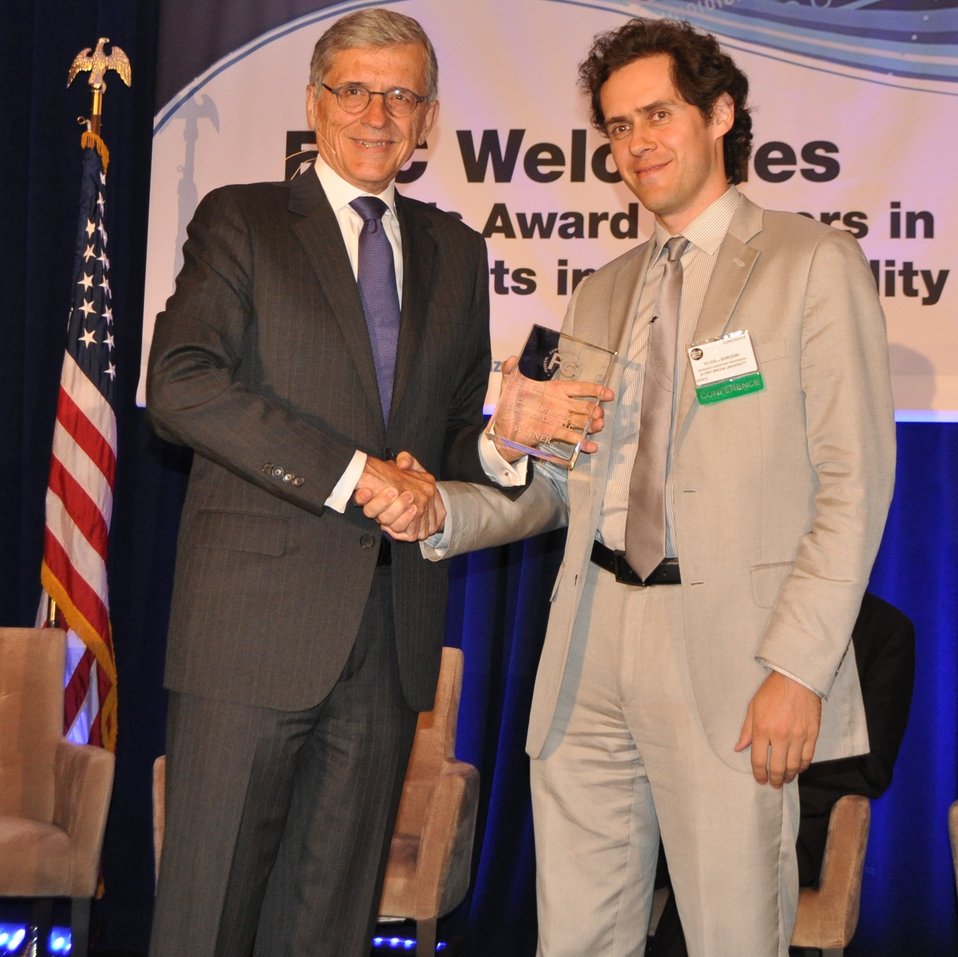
6.9.2014 Third Annual Chairman’s Awards for Advancement in Accessibility

Winner for the category of Social Media: Easy Chirp: Victor Tsaran accepting the award